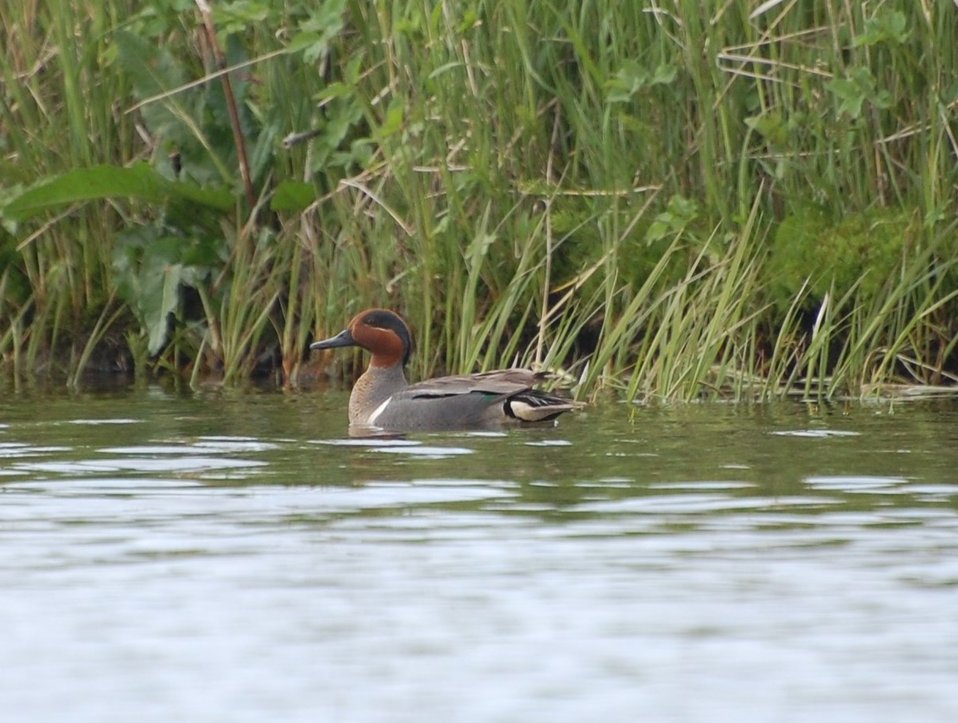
American Green-winged Teal, Izembek National Wildlife Refuge